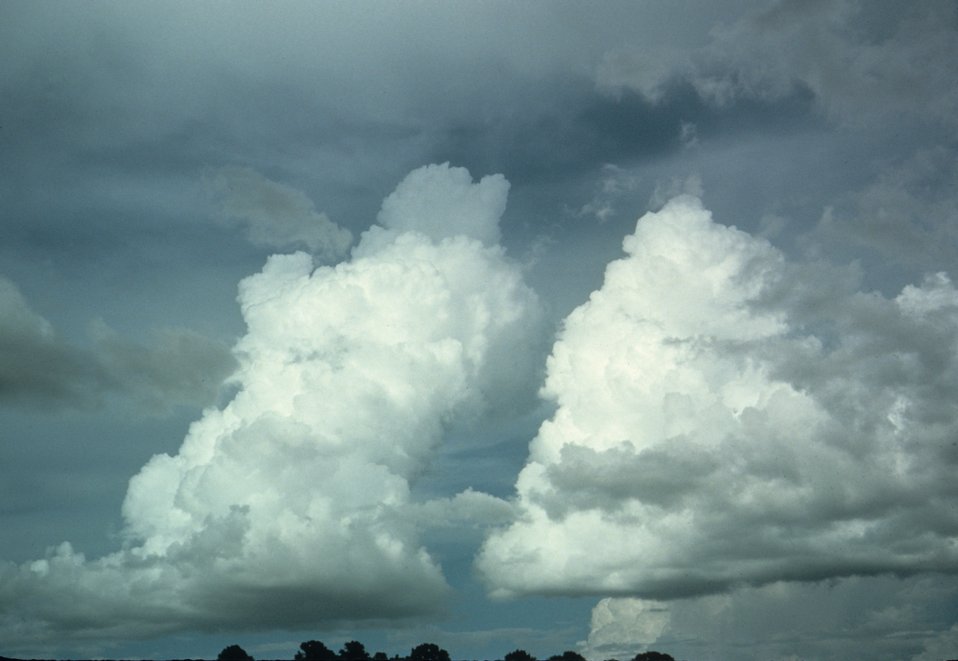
Twin towering cumulus.